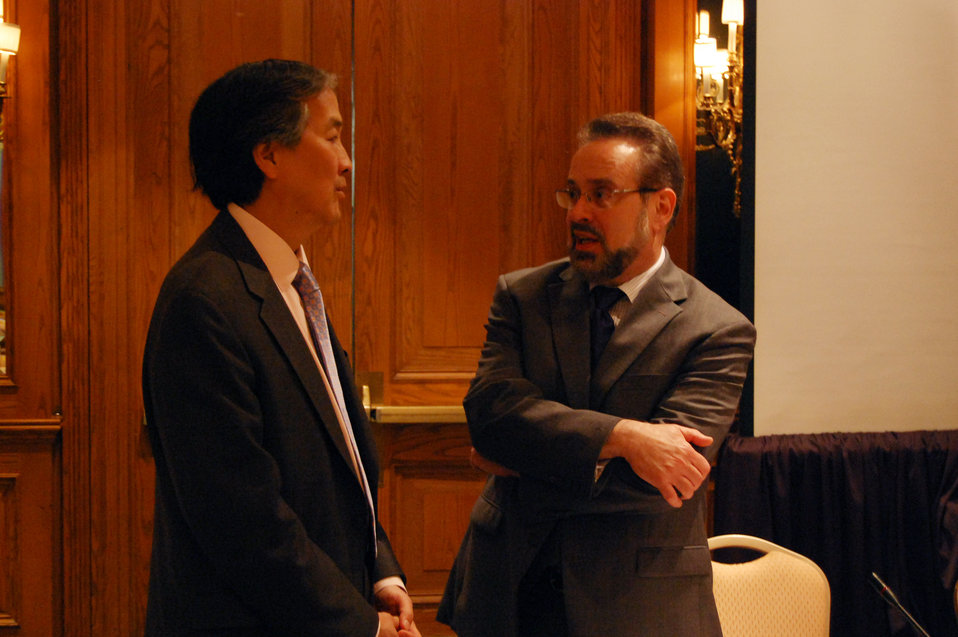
PACHA conf021